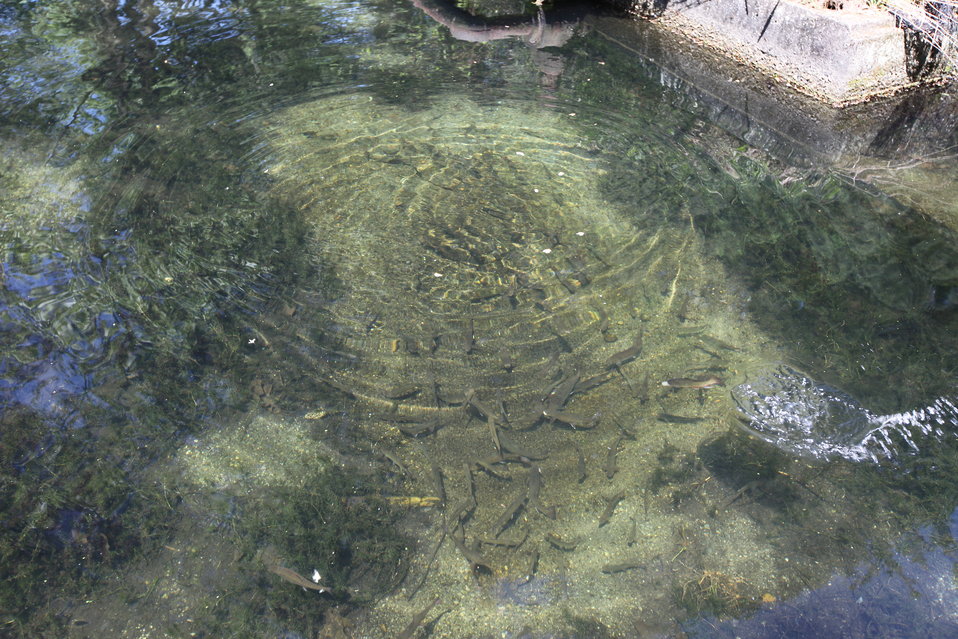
Youth Fishing Derby 2012

Megan Nagel/USFWS